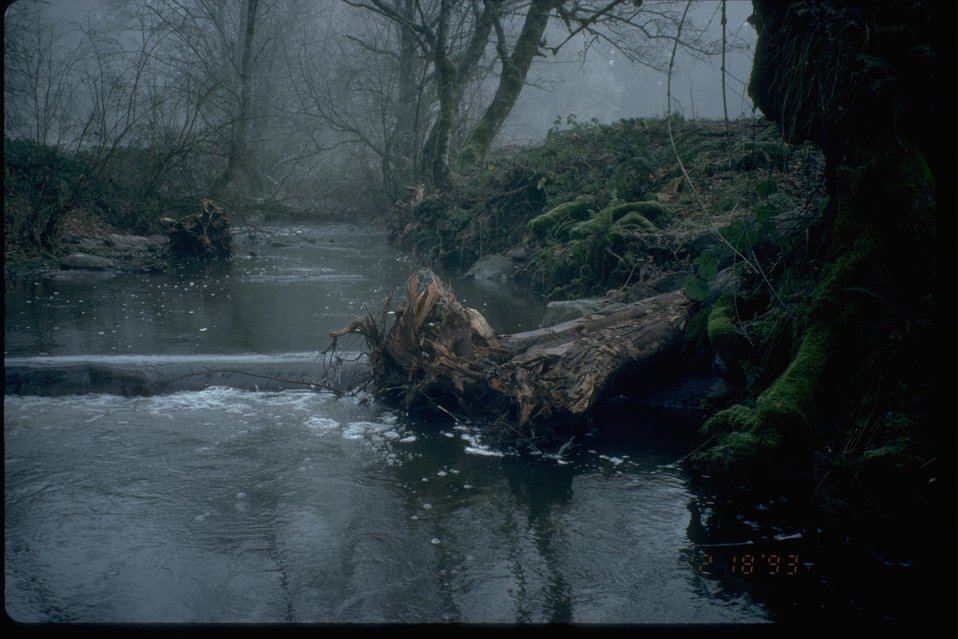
Instream structure (weir) at WSU Vancouver, WA.